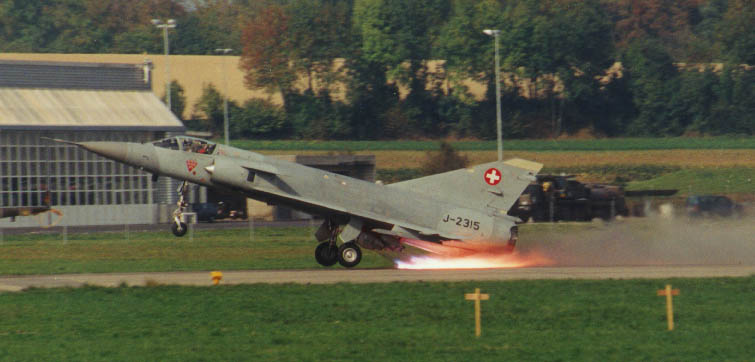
Start einer mirage3s mit jato inpayerne (1996) Fran√ßais†: D√©collage d'un Mirage IIIS (J-2315) avec fus√©e d'appoint JATO √† Payerne, Suisse, 1996